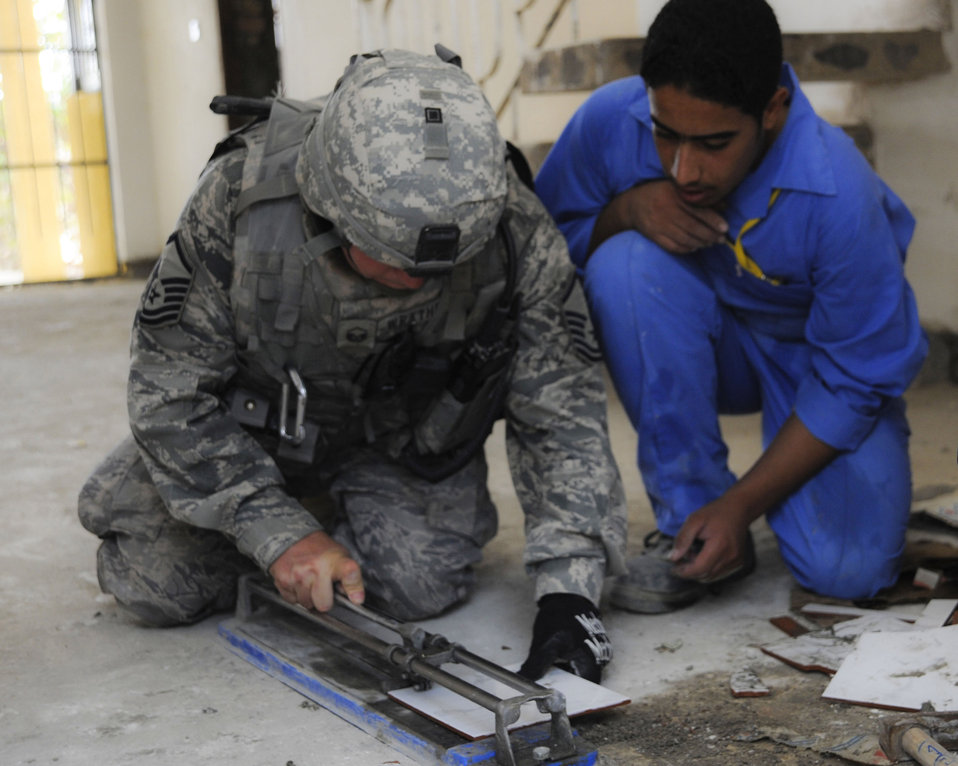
RED HORSE Airmen give Iraqis reason for hope

Master Sgt. Patrick Wrathell shows an Iraqi student worker how to cut tile at Hawr Rajab, Iraq, Aug. 27. Sergeant Wrathell is the first sergeant and the NCO in charge of downtown operations for 557th Expeditionary RED HORSE Squadron.